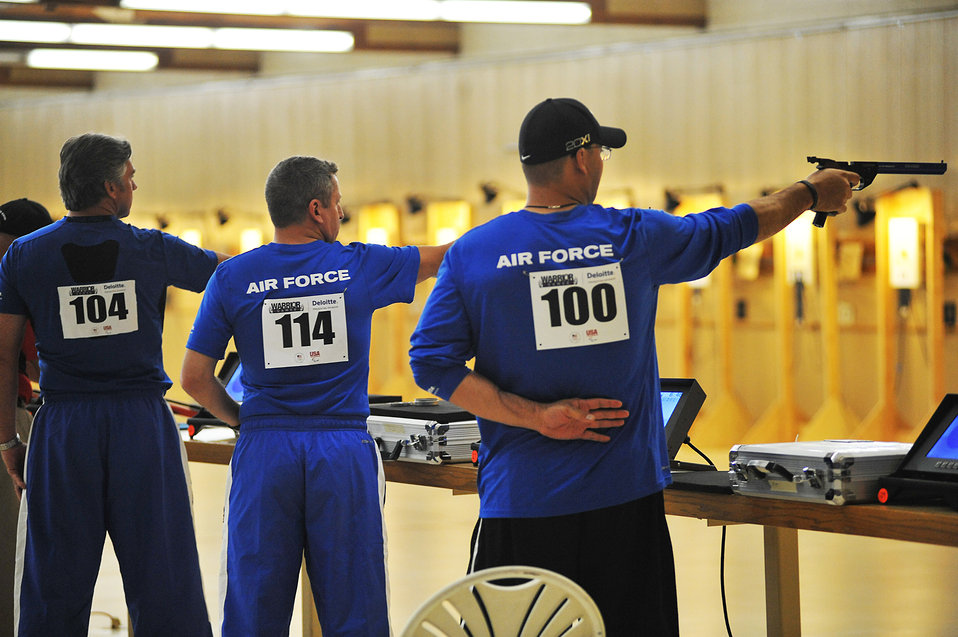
Warrior Games

From right: U.S. Air Force Master Sgt. Christopher Aguilera, Maj. Greg Rich and Ken Gestring aim their pistols at their targets during the finals of the shooting competition during Warrior Games 2012 at the Olympic Training Center in Colorado Springs, Colo., May 3, 2012. The group is with the Air Force team.